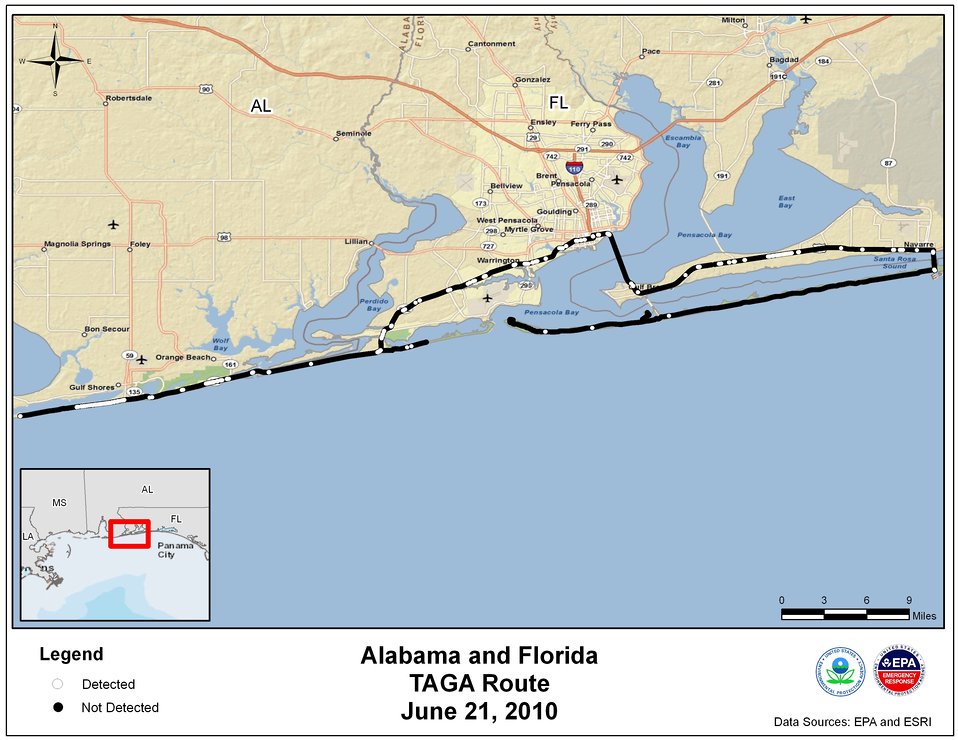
EPA TAGA Air Monitoring Locations June 21, 2010